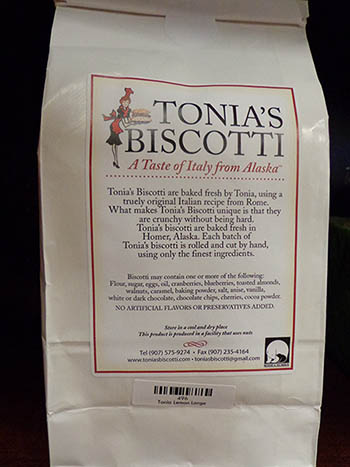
RECALLED – Lemon Biscotti Dipped in White Chocolate

January 3, 2014 – Product Recall – Tonia’s Biscotti II LLC Issues Allergy Alert on Undeclared Wheat, Milk, and Soy in Tonia’s Biscotti Sampler Bags, Lemon Biscotti Dipped in White Chocolate Bags, and Individually Wrapped Biscotti of All Flavors.